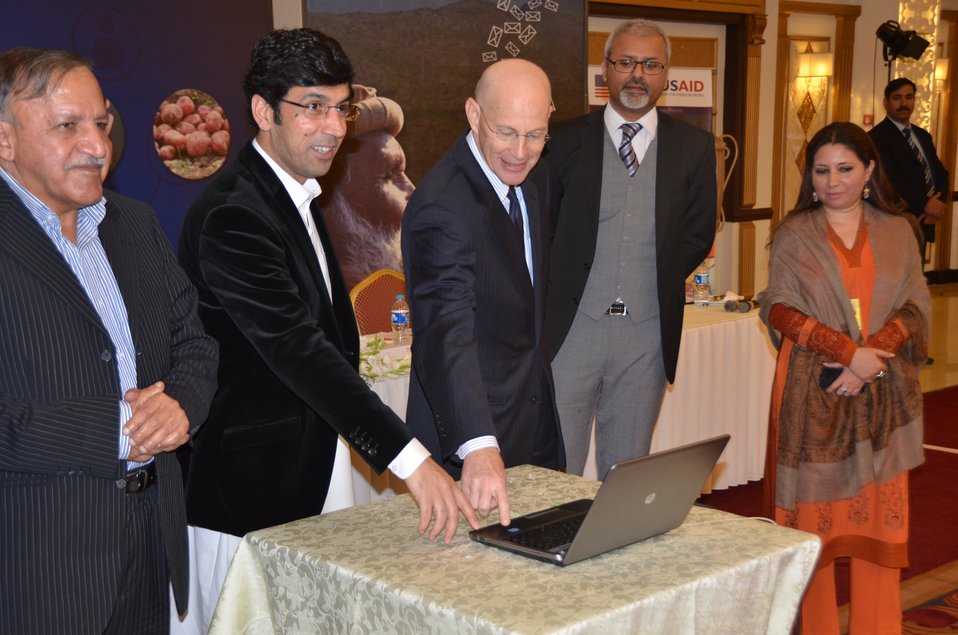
Gregory Gottlieb Mission Director USAID with Shahram Khan Tarrakai Minister forAgriculture, Livestock and Cooperation KP officially launching the SMS service for farmers